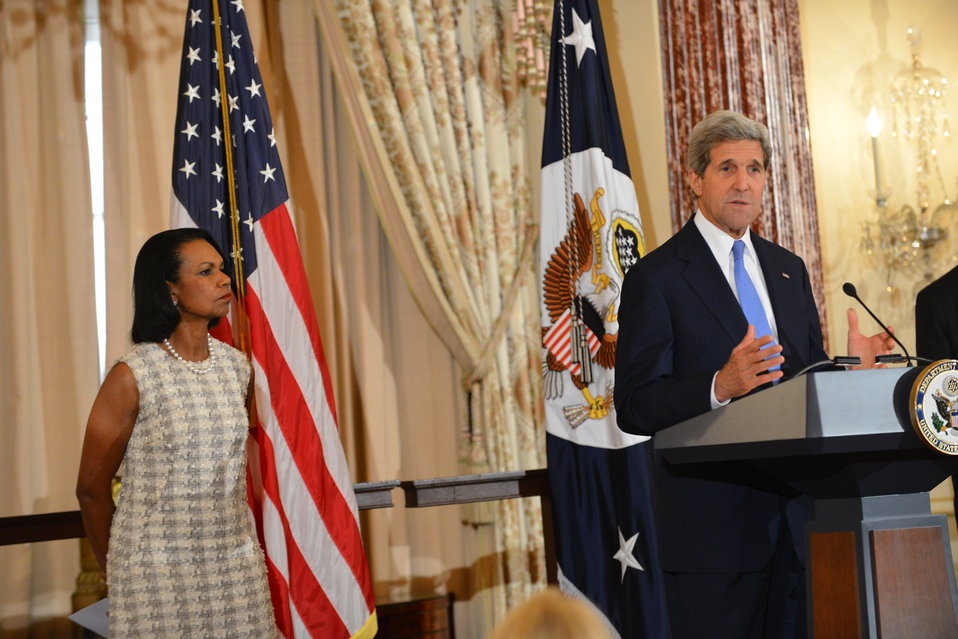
Secretary Kerry Delivers Remarks at a Portrait Unveiling Ceremony in Honor of Former Secretary Condoleezza Rice

U.S. Secretary of State John Kerry delivers remarks at a portrait unveiling ceremony in honor of former Secretary Condoleezza Rice at the U.S Department of State in Washington, D.C. on June 18, 2014.